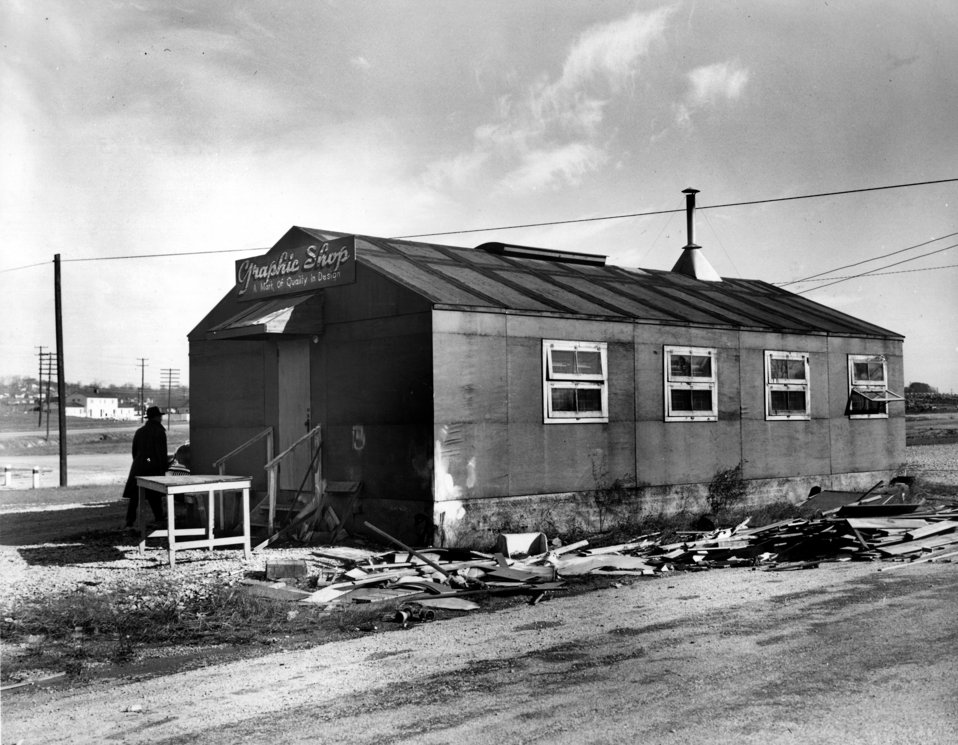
Graphic Shop Oak Ridge

5364-7 DOE photo by Ed Westcott Oak Ridge Tennessee